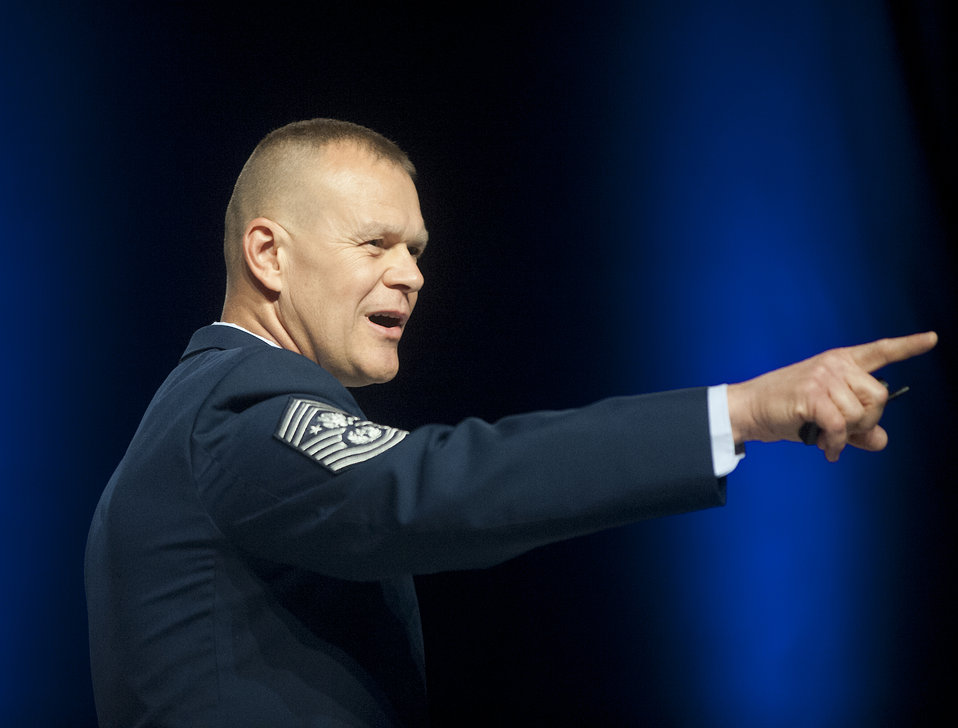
Chief Master Sgt. of the Air Force James A. Roy speaks during the enlisted call of the Air Force Association's Air and Space Conference and Technology Exposition in Washington, Sept. 19, 2012.